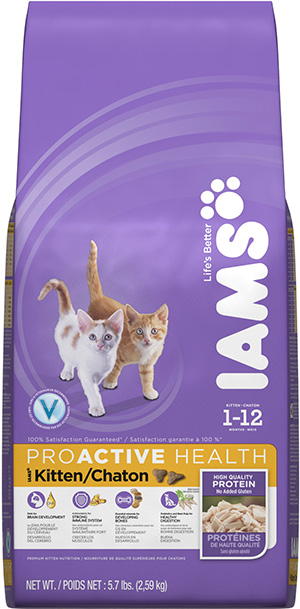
RECALLED – Dog and Cat foods - Dry

August 14, 2013 – Product Recall – P&G Voluntarily Recalls Limited Quantity of Dry Pet Food Due to Possible Health Risk.